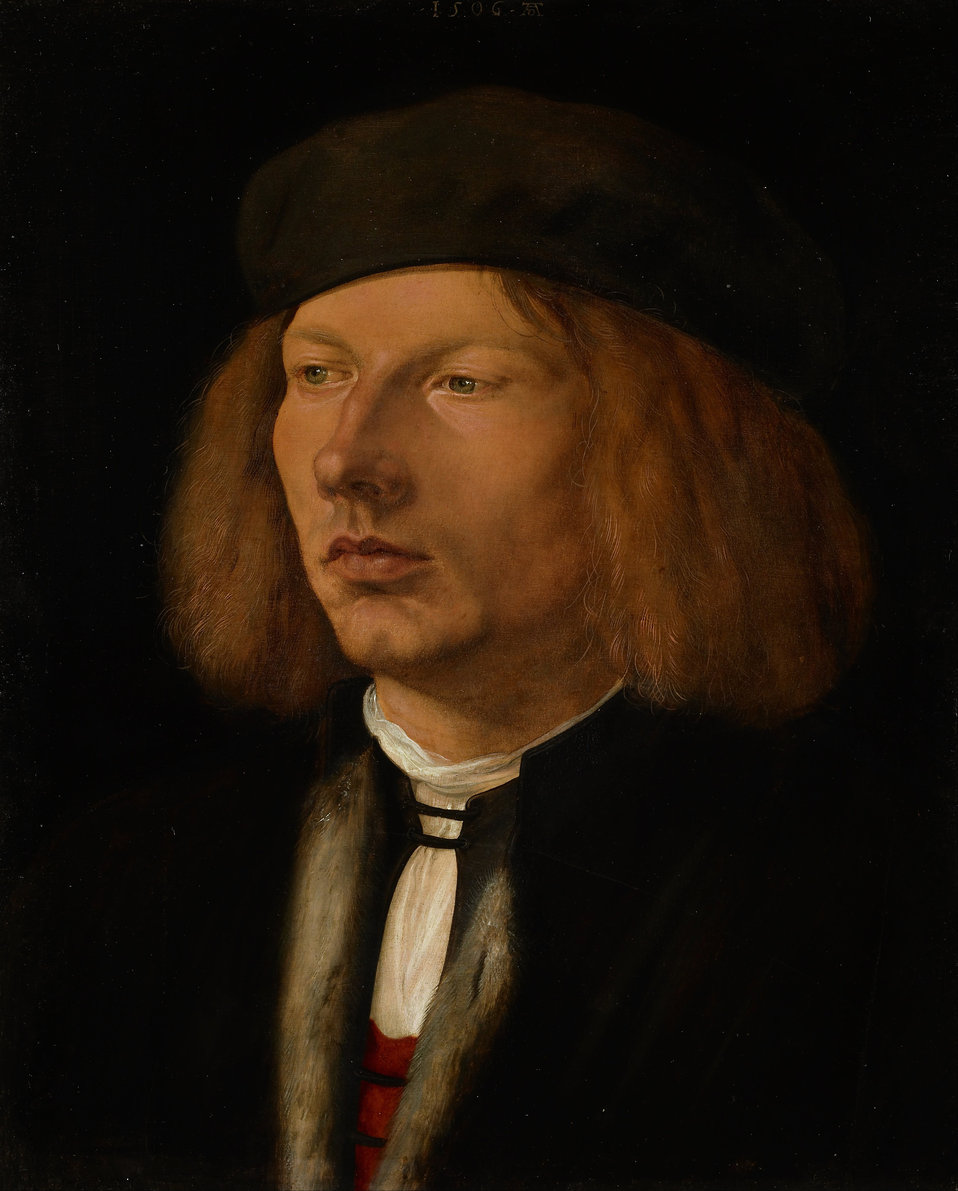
Albrecht Dürer - Burkhard von Speyer - Google Art Project